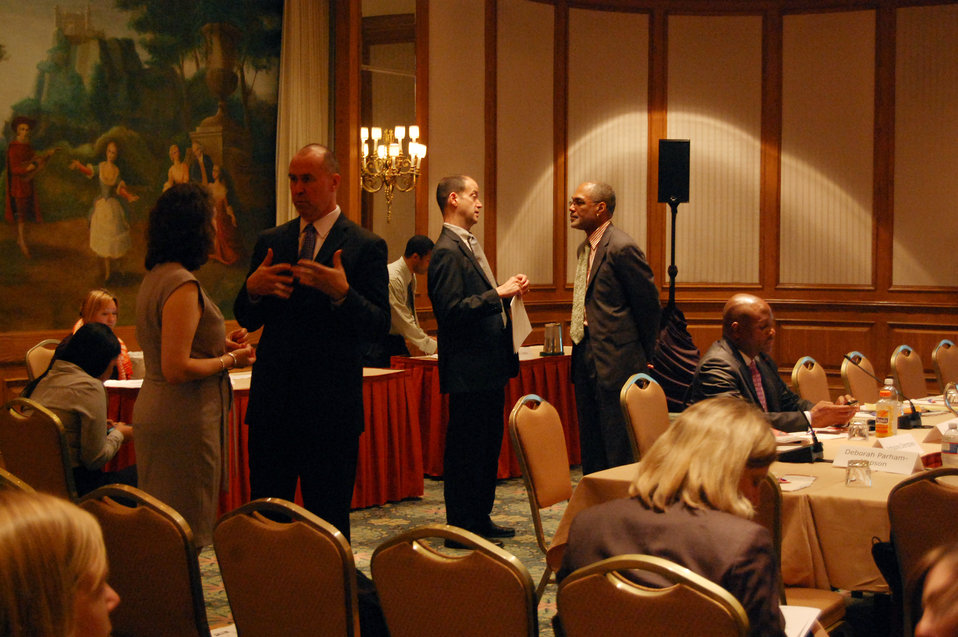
PACHA conf030